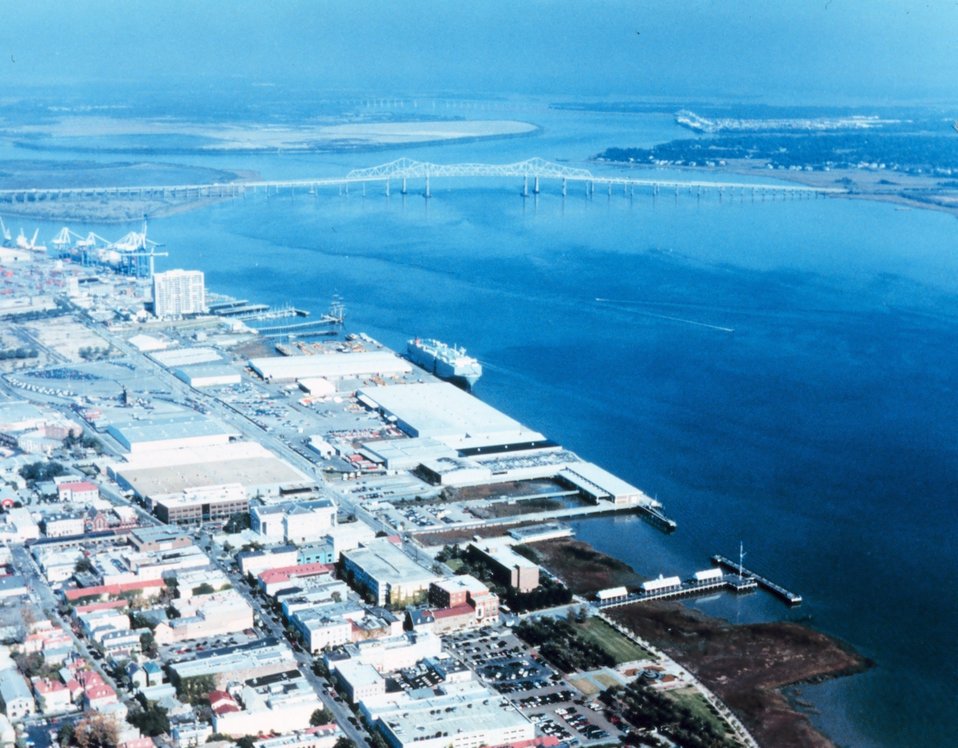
3246 North Latitude 7955 West Longitude.